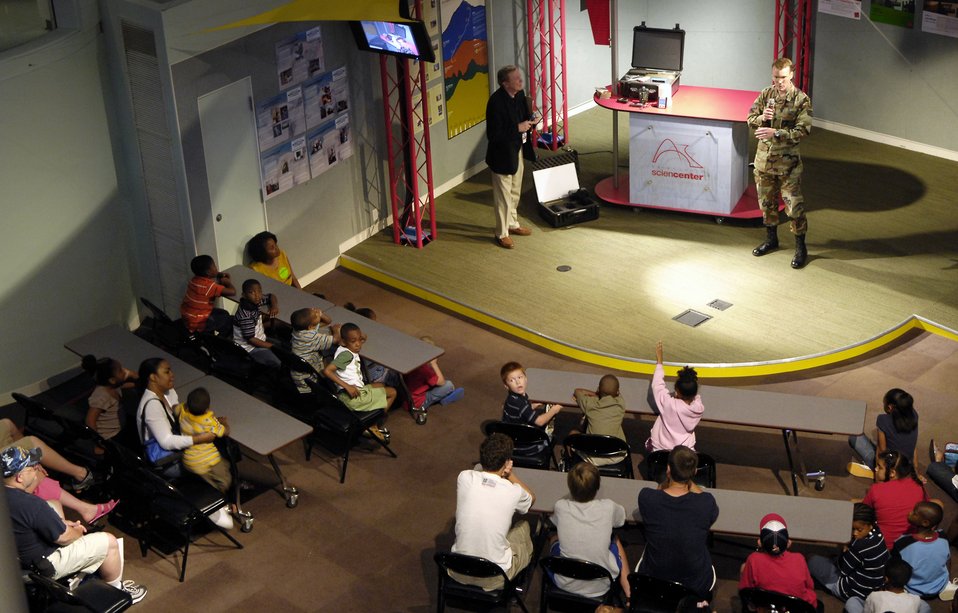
Air Force Week in St. Louis - July 2-6

Staff Sgt. Troy Goercke provides a presentation about combat weather to parents and children July 2 at the Saint Louis Science Center. Combat weather technicians were on hand at the center for the kickoff of Air Force Week being celebrated in St. Louis, this week. Sergeant Goercke is assigned to Det. 5 of the 10th Combat Weather at Fort Bragg, N.C.